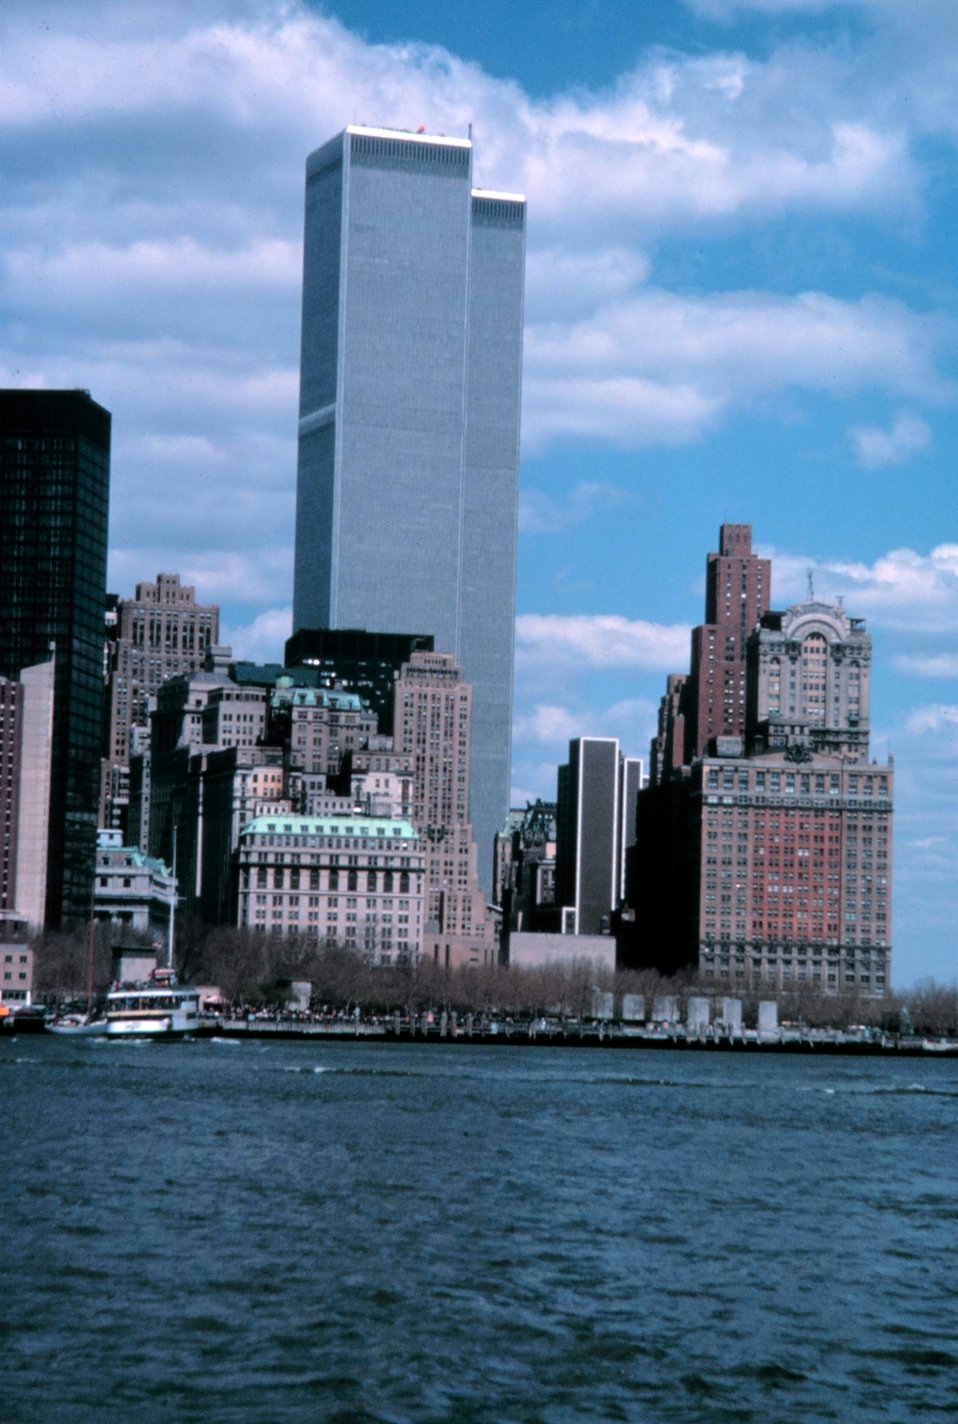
The World Trade Center as seen from the Governor's Island Ferry.